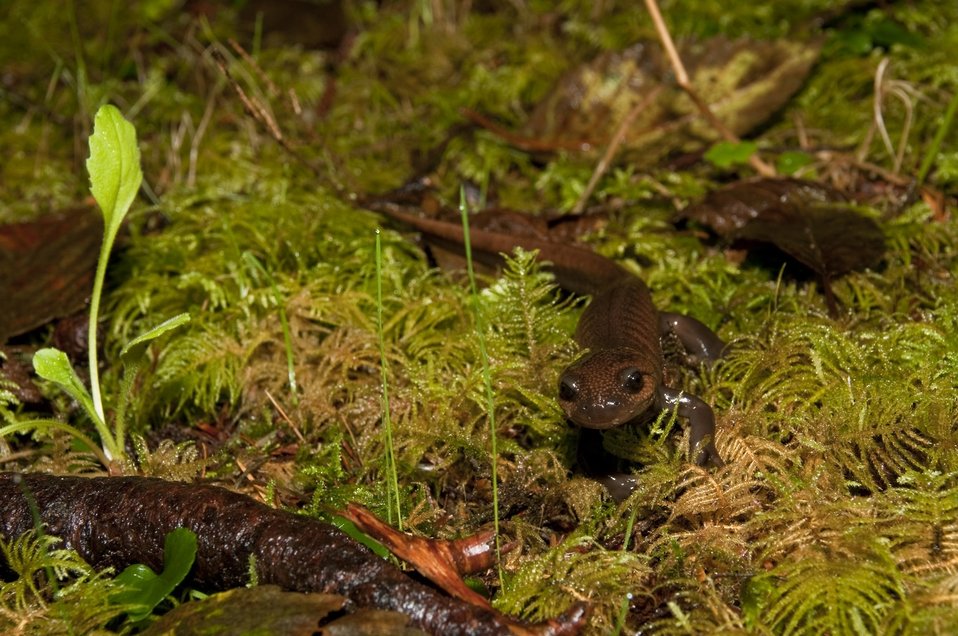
Northwest salamander, Cape Meares NWR

A Northwest salamander darts along the ground at Cape Meares National Wildlife Refuge in Oregon.